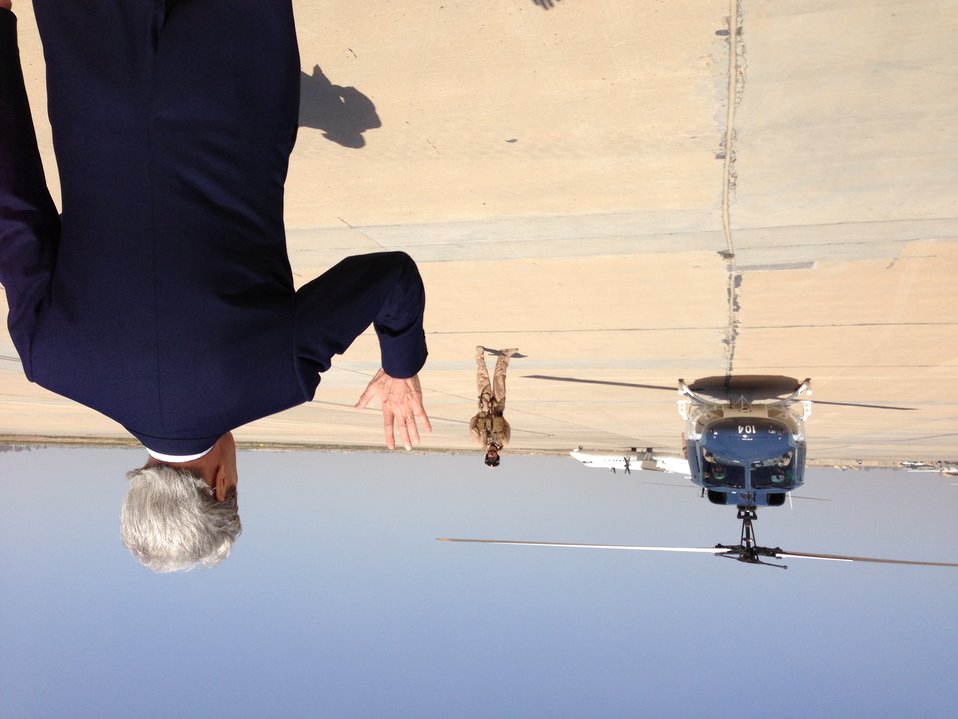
Secretary Kerry Arrives at Baghdad Airport

U.S. Secretary of State John Kerry waves to the helicopter that will transport him to the U.S. Embassy in Baghdad, Iraq on March 24, 2013.